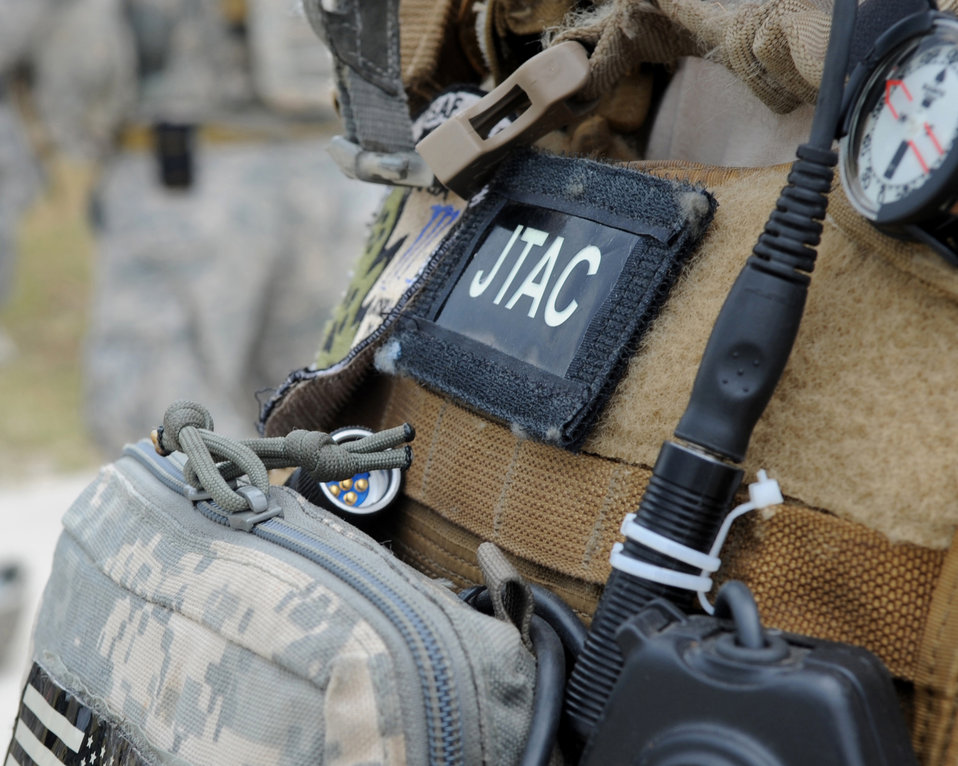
Exercise Allied Strike 2010

Joint terminal attack controllers test their skills of directing combat aircraft onto enemy targets and providing close air support to units during Exercise Allied Strike 10 July 23, 2010, in Grafenwoehr, Germany.